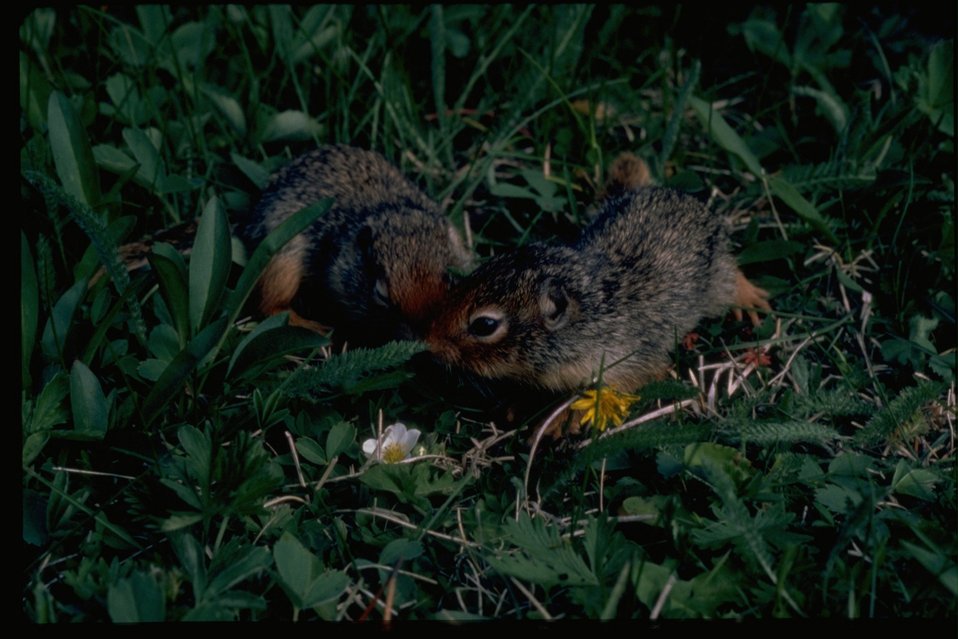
Chipmunks playing in small weeds.